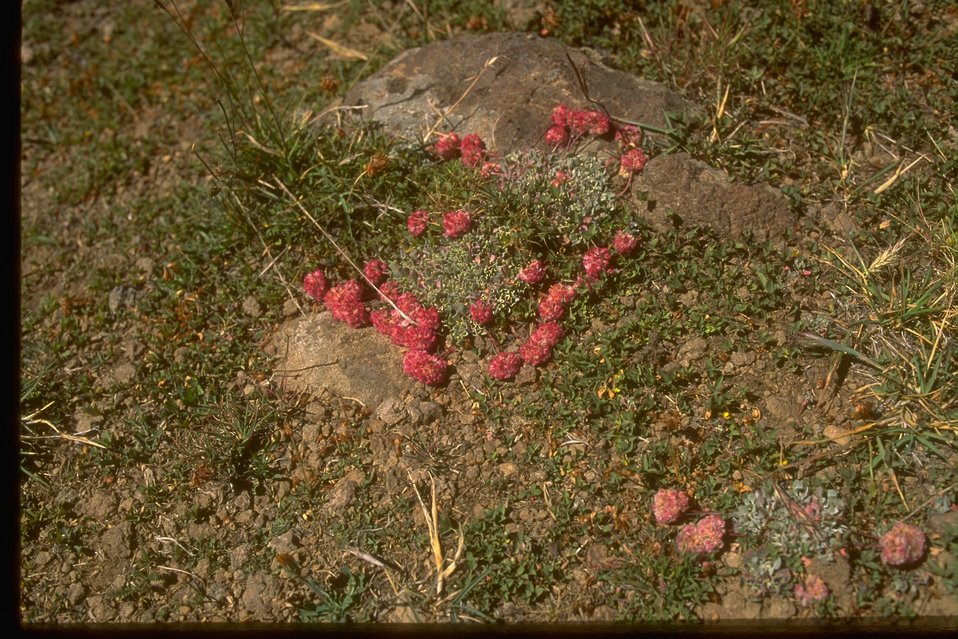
Wildflowers near Steens Mountain.